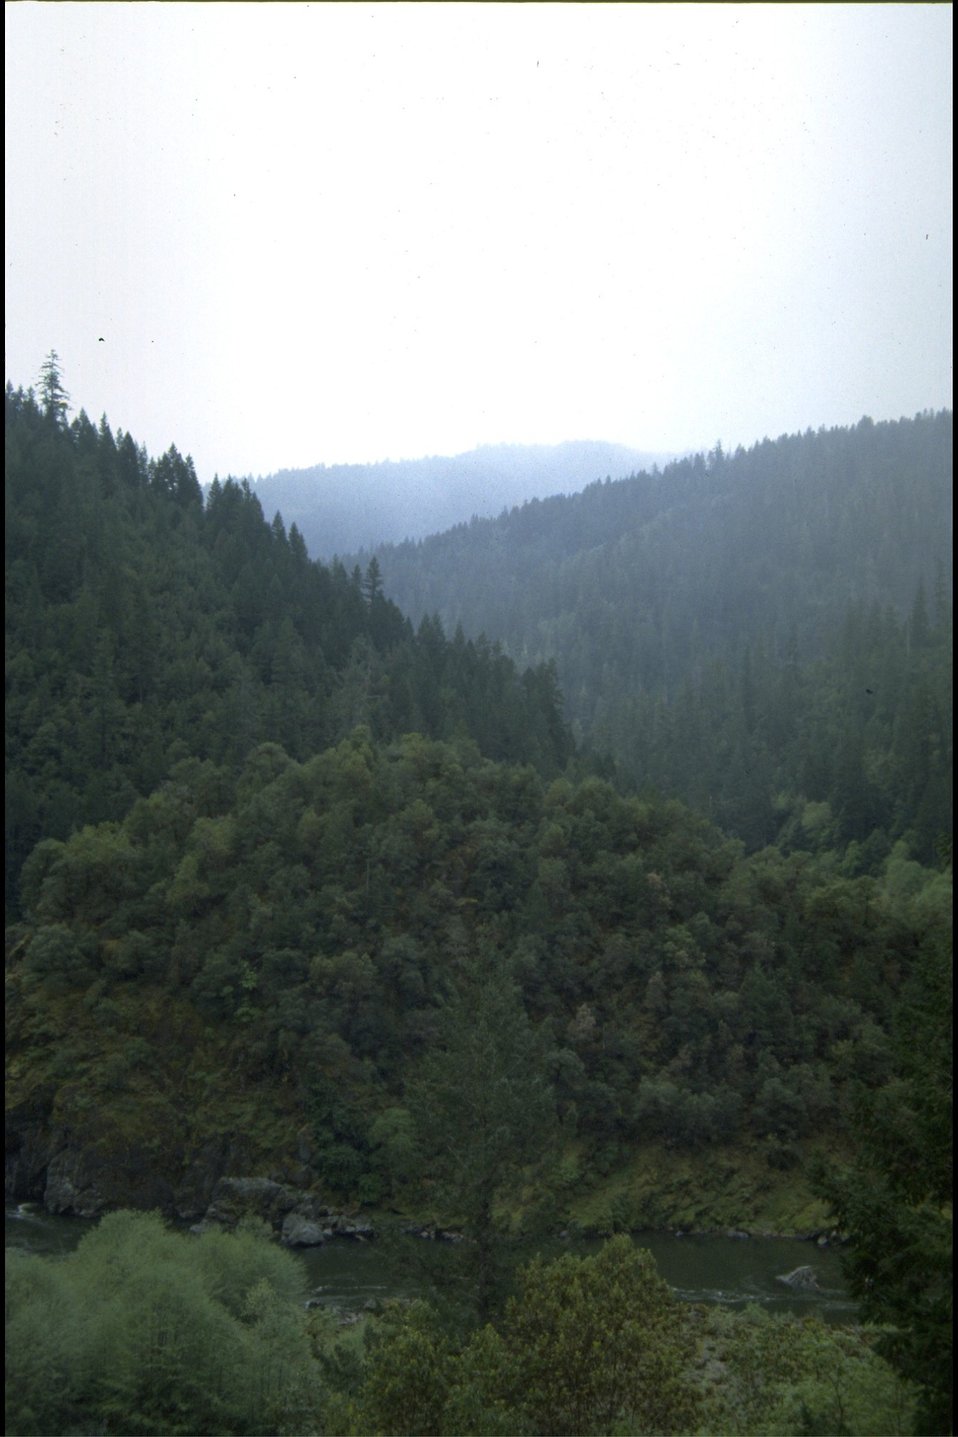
Rogue River - Horse Shoe Bend, wild section.